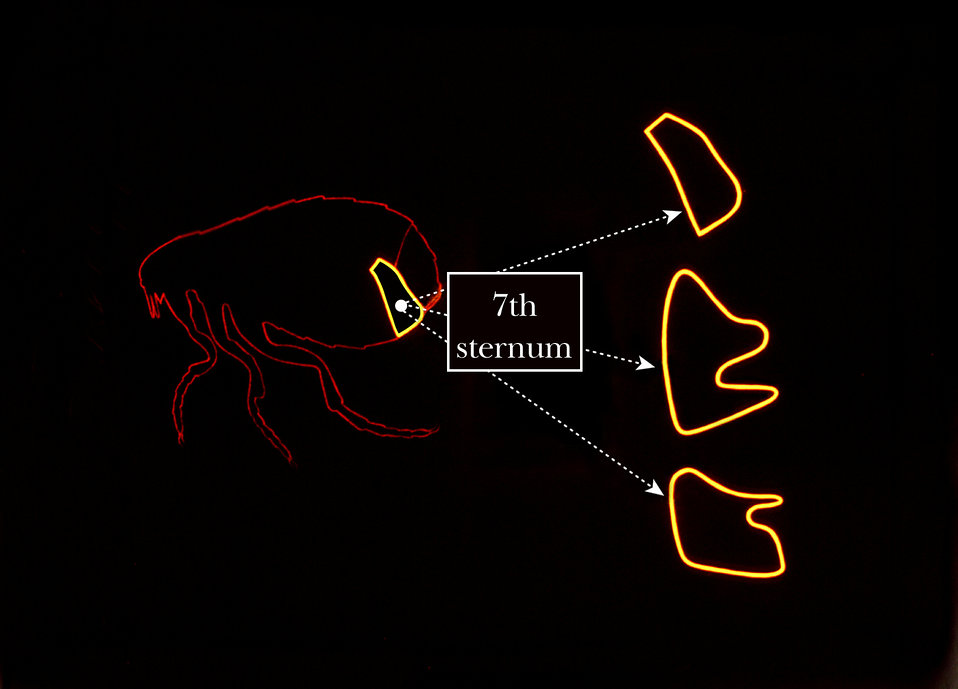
This illustration shows some of the identifying morphologic characteristics located on the abdomen of a typical female flea.